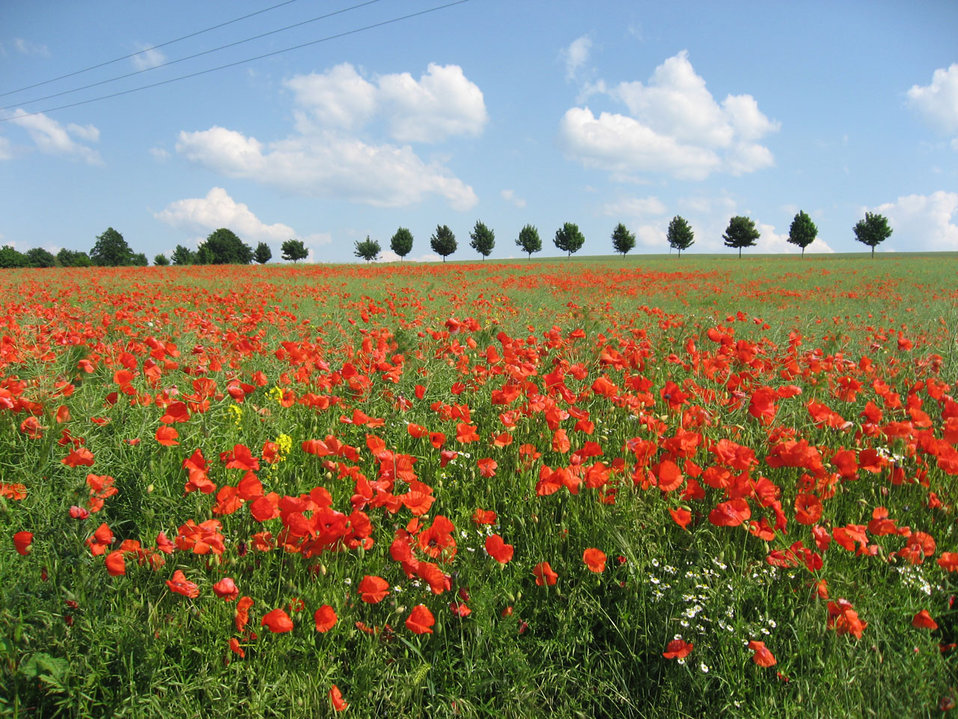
Poppy field

Thriving poppy field.